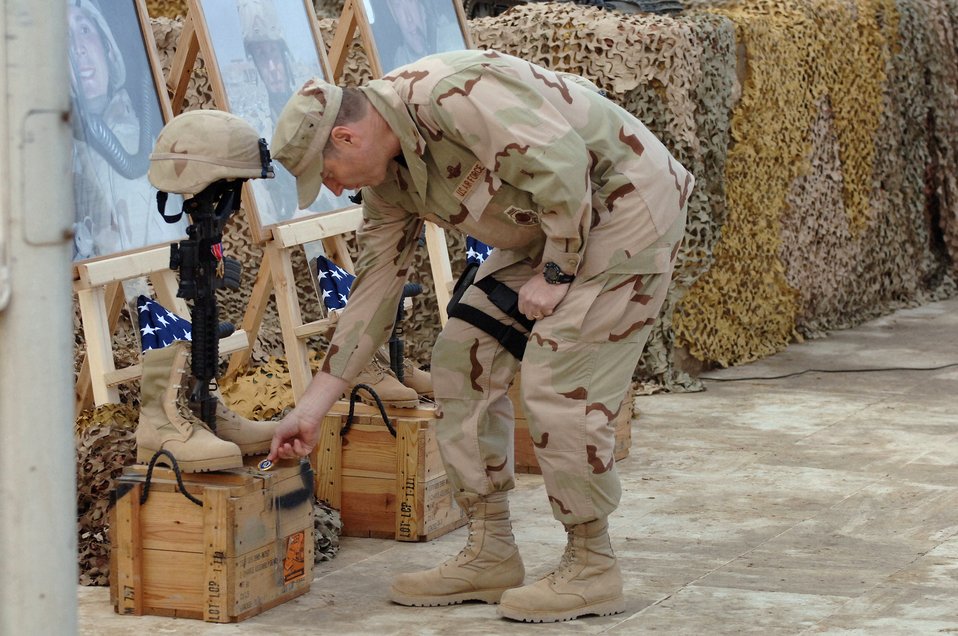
Fallen EOD Airmen remembered

Brig. Gen. Robin Rand, the 332nd Air Expeditionary Wing commander, places one of his coins on the memorial display for Tech. Sgt. Timothy Weiner during a memorial service at Sather Air Base, Iraq, Jan. 10. Sergeant Weiner, Senior Airman Daniel Miller and Senior Airman Elizabeth Loncki were killed in the line of duty Jan. 7 when a vehicle-borne improvised explosive device they were investigating detonated.